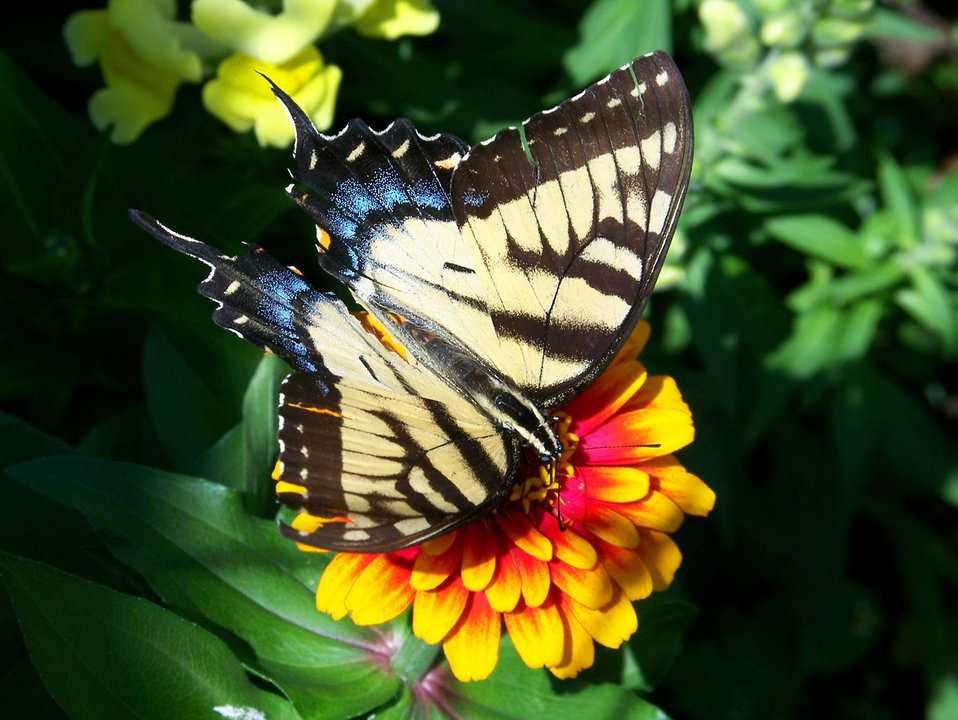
Butterfly on flower

A butterfly sitting on a flower.